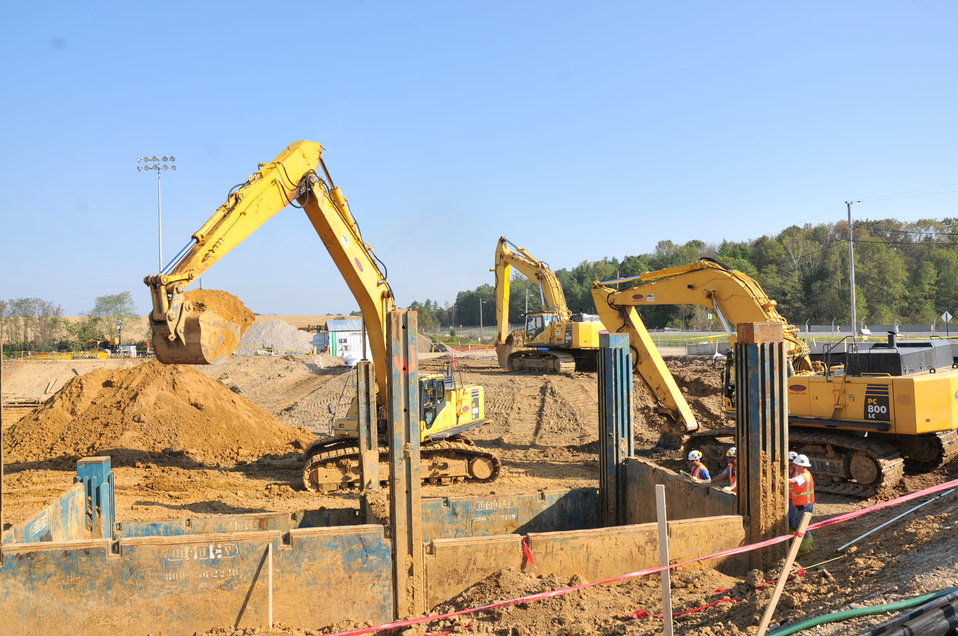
Recovery Act Workers Reduce Contaminant Levels Sharply in Portsmouth Site ‘Big Dig’

Recovery Act workers have reduced contaminant levels by 96 percent in soil 30 feet below ground in what has been coined the Portsmouth Gaseous Diffusion Plant’s “Big Dig.”

In the $34 million Recovery Act project, workers are excavating a 70,000-square-foot area of soil with a high concentration of trichloroethene (TCE) under a now-defunct holding pond. The chemical compound was used as an industrial solvent at the plant, which enriched uranium for defense and commercial nuclear purposes until production ended in 2001.